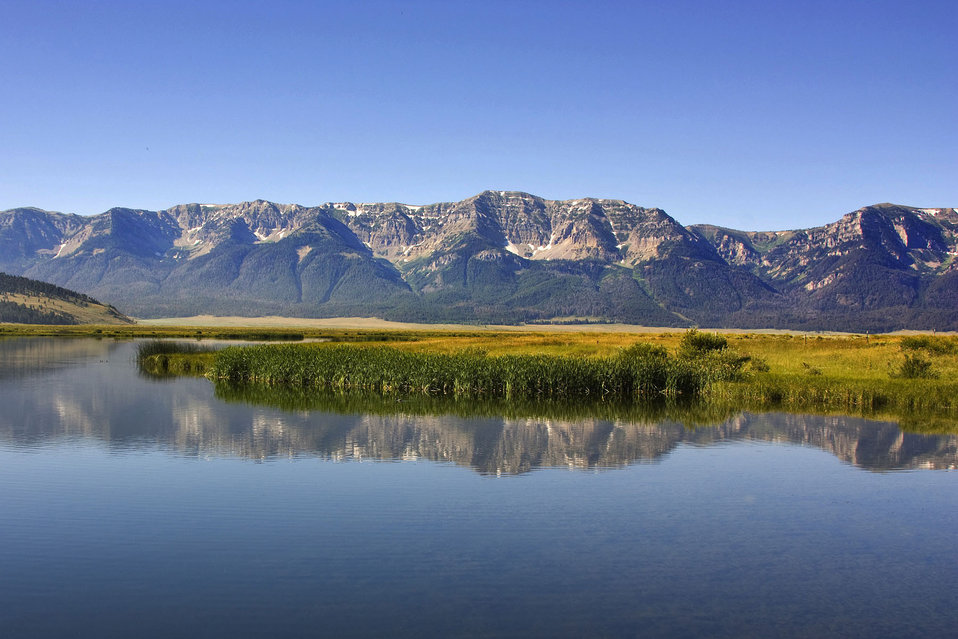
Widgeon Pond reflects Mount Taylor, part of the Centennial Mountains that border Red Rock Lakes National Wildlife Refuge. Widgeon Pond is home to Trumpeter Swans and many waterfowl.

Credit: James 'Newt' Perdue / USFWS

Photo Contest Entry #131